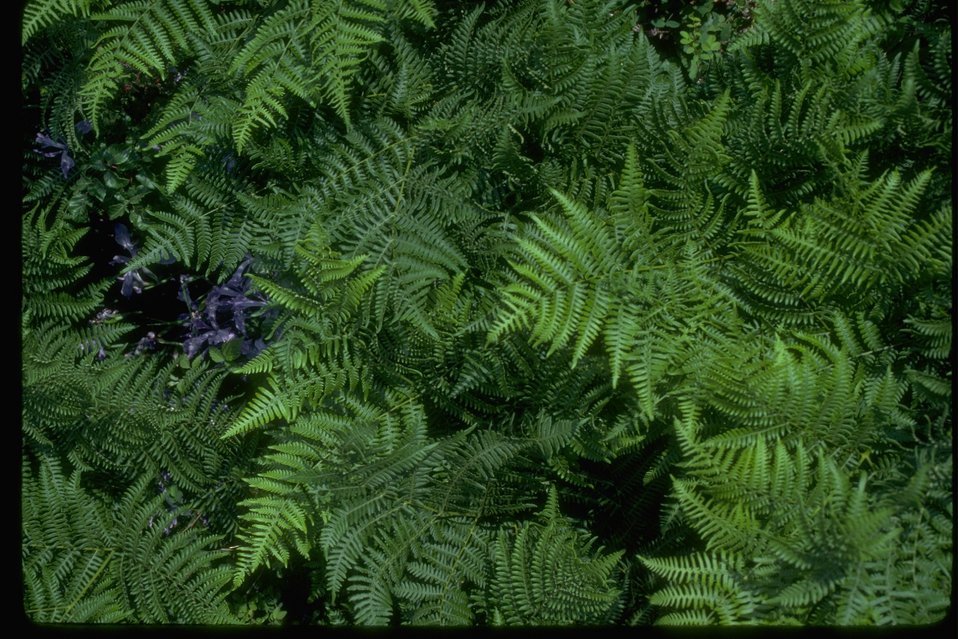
Bracken Fern